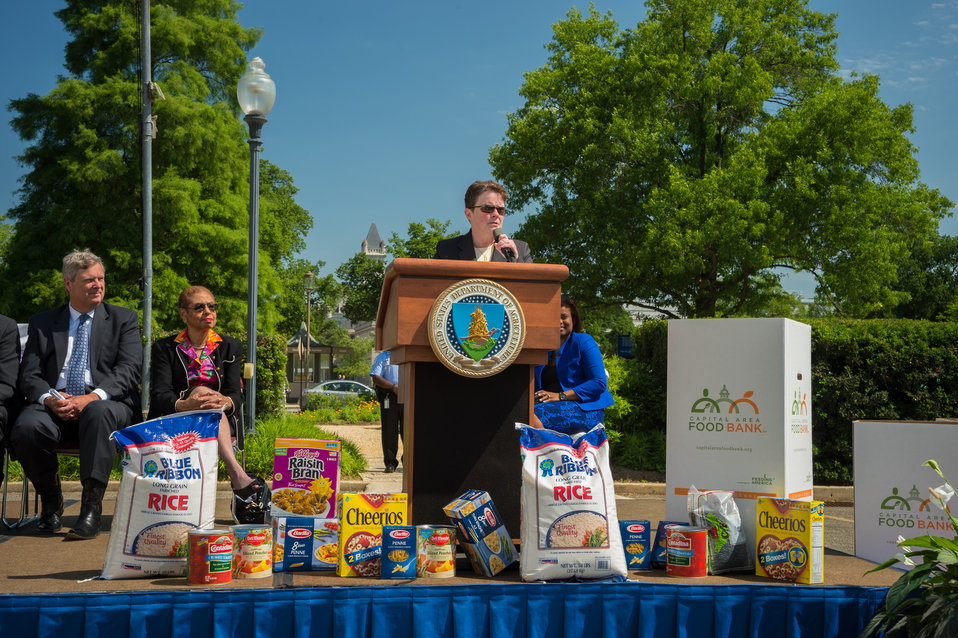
Pamela Mitchell, Deputy Chief Human Capital Officer, Department of Defense (DOD) accepted the challenge of friendly competition during the 2014 National Feds Feed Families Kick-Off at the United States Department of Agriculture’s (USDA’s) People’s Garden in Washington, DC, Mon. Jun. 2, 2014. The theme of this year’s event is, “Help Knock Out Hunger.” The USDA will lead the campaign with the support of the Chief Human Capital Officers Council and other agency partners, which officially begins on June 1 and will run through August 27, 2014. On stage behind Ms. Mitchell are Agriculture Secretary Tom Vilsack and Congresswoman Eleanor Holmes Norton.